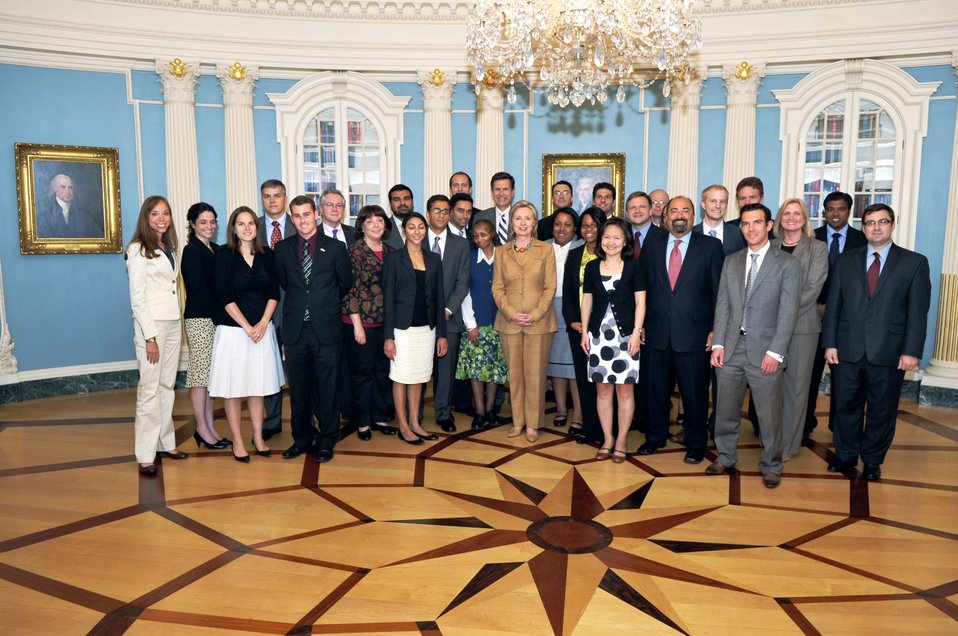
Secretary Clinton With Bureau of South and Central Asian Affairs Staff

U.S. Secretary of State Hillary Rodham Clinton poses for a photo with staff from the Bureau of South and Central Asian Affairs involved in the U.S.-India Strategic Dialogue at the U.S. Department of State in Washington, D.C., on June 11, 2010.